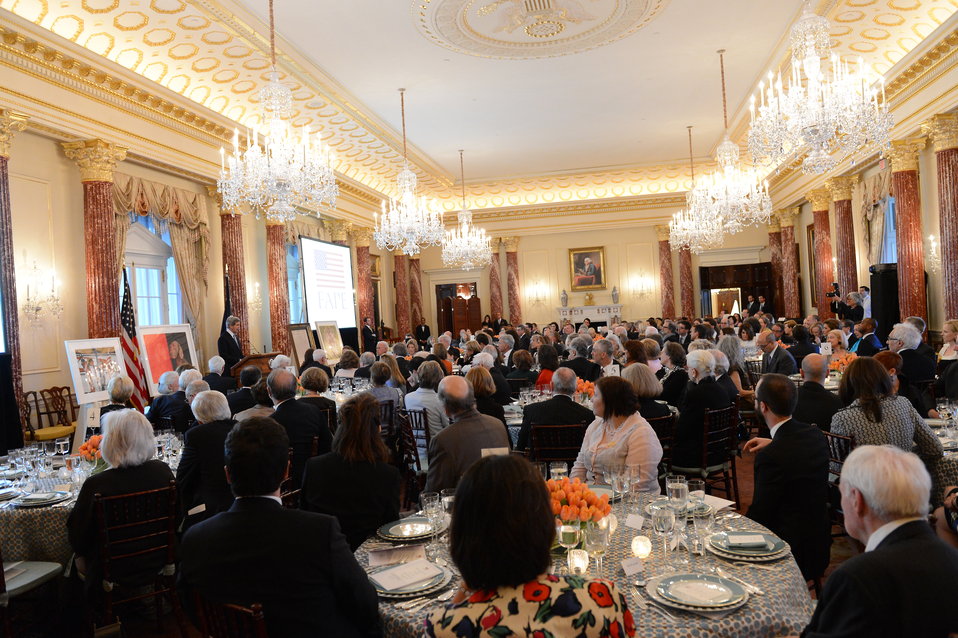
Secretary Kerry Delivers Remarks at the Annual Foundation for Arts and Preservation in Embassies

U.S. Secretary of State John Kerry delivers remarks at the Annual Foundation for Arts and Preservation in Embassies (FAPE) dinner at the U.S. Department of State in Washington, D.C., on April 29, 2013.